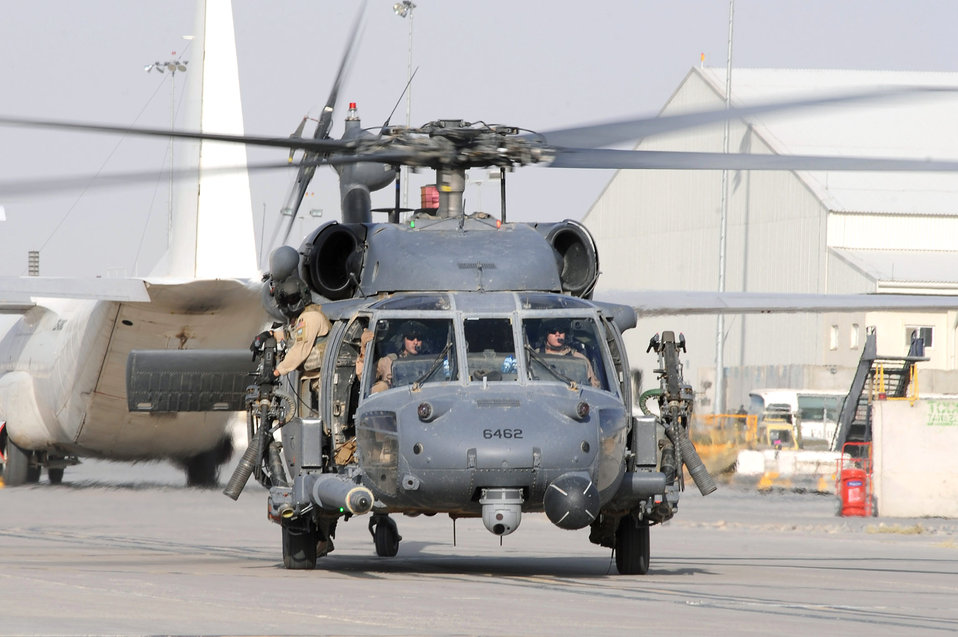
26th ERS

An HH-60G Pave Hawk helicopter taxis before a mission Oct. 1, 2010, at Kandahar Airfield, Afghanistan. Airmen of the 26th Expeditionary Rescue Squadron conduct combat search and rescue missions as well as transporting injured military members and civilians for medical treatment.